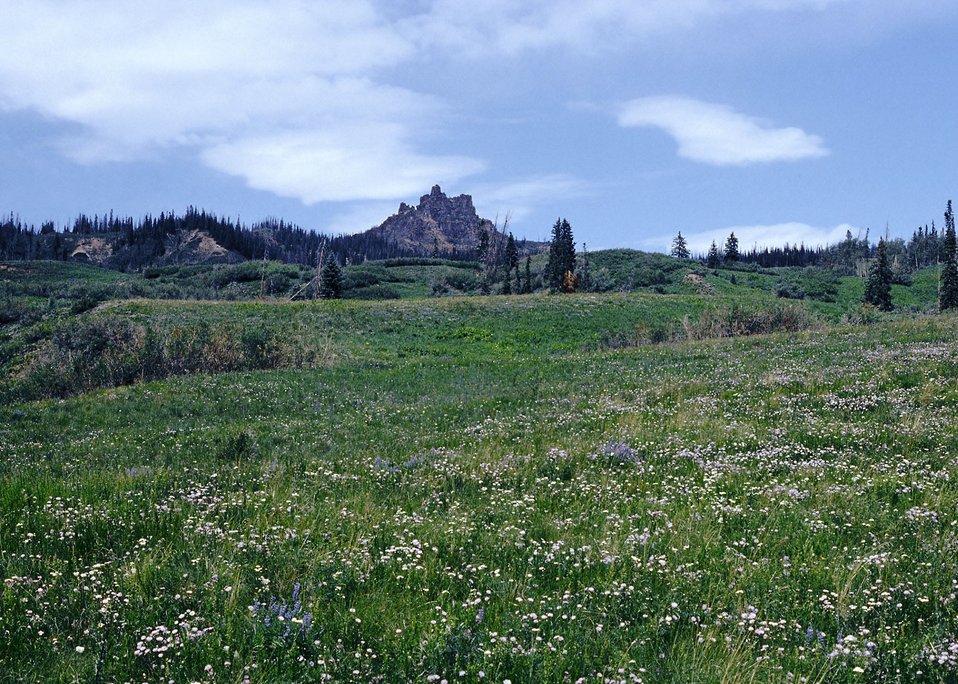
Castel Peak